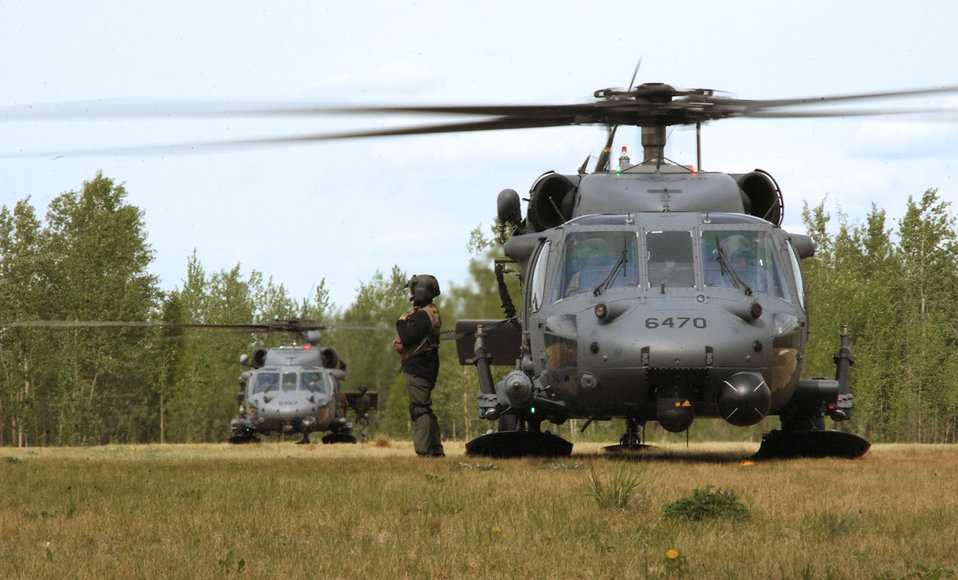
To the rescue during Northern Edge 2006

Two HH-60 Pave Hawks from the 210th Rescue Squadron at Eielson Air Force Base, Alaska, prepare to take off during a combat search and rescue mission at Fort Wainwright, Alaska, for exercise Northern Edge 2006 on Tuesday, June 6, 2006. Northern Edge is a joint training exercise hosted by Alaskan Command and is one of a series of U.S. Pacific Command exercises that prepare joint forces to respond to crises in the Asian Pacific region.